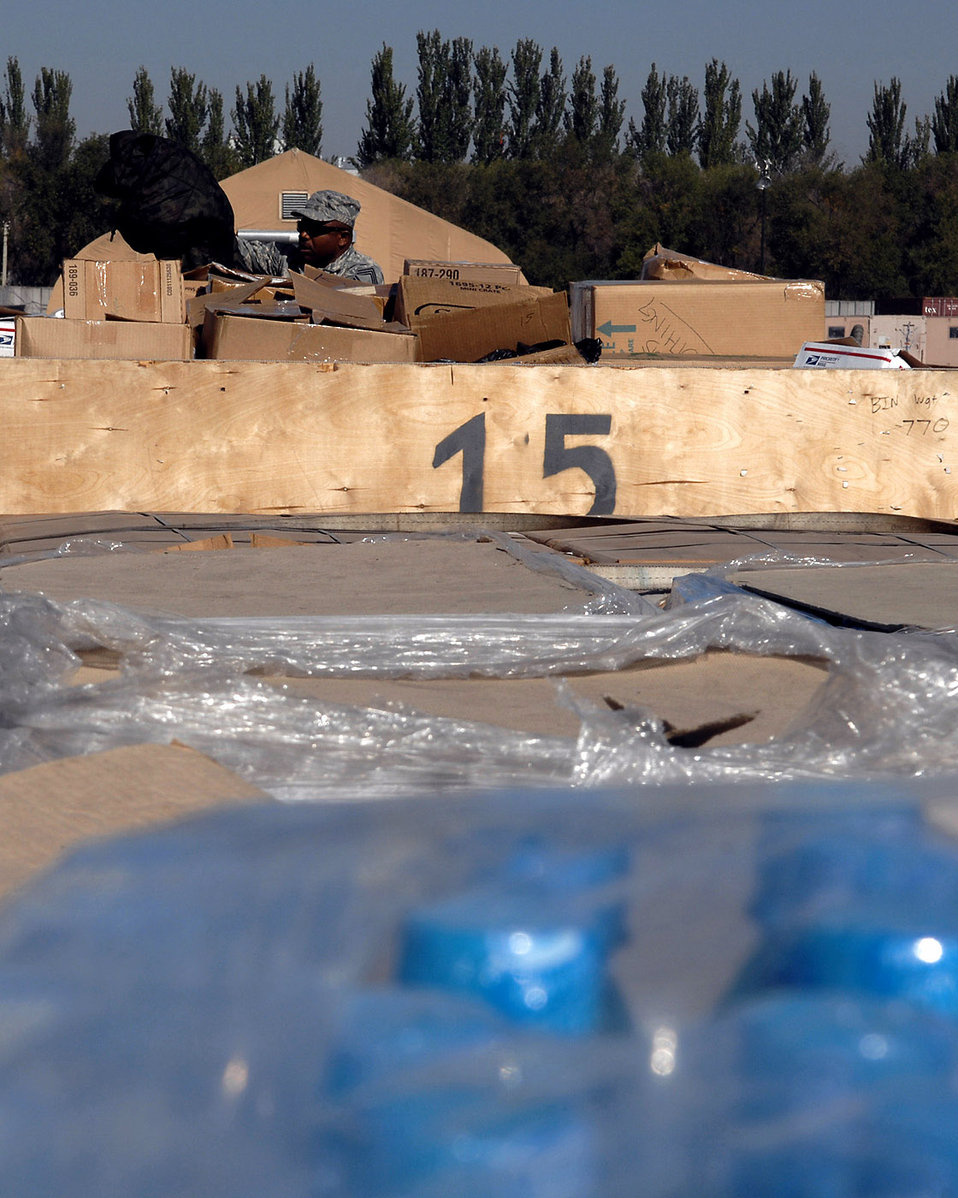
Manas Air Base provides aid to earthquake victims

Chief Master Sgt. Stanley Walker adds the last few donated blankets to a shipment of humanitarian aid intended for survivors of an Oct. 5 earthquake in southern Kyrgyzstan. Airmen from Manas Air Base, Kyrgyzstan, sent a flatbed truck of aid, Oct. 8, that included pallets of food rations, bottled water, surplus military cold weather gear and more than 120 boxes containing 3,000 pounds of adult and children's winter clothing, blankets and toys. A call for personal donations resulted in more than 40 Airmen donating their own blankets they deployed here with. Chief Walker is assigned to the 376th Expeditionary Logistics Squadron.